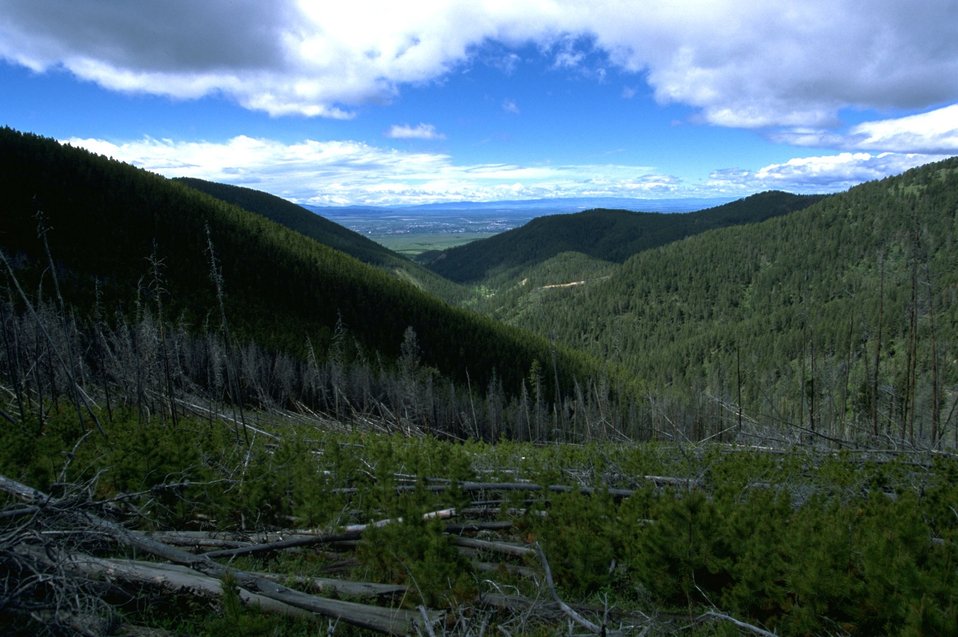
Forested slopes with downed tress in the foreground in the Judith Mountains